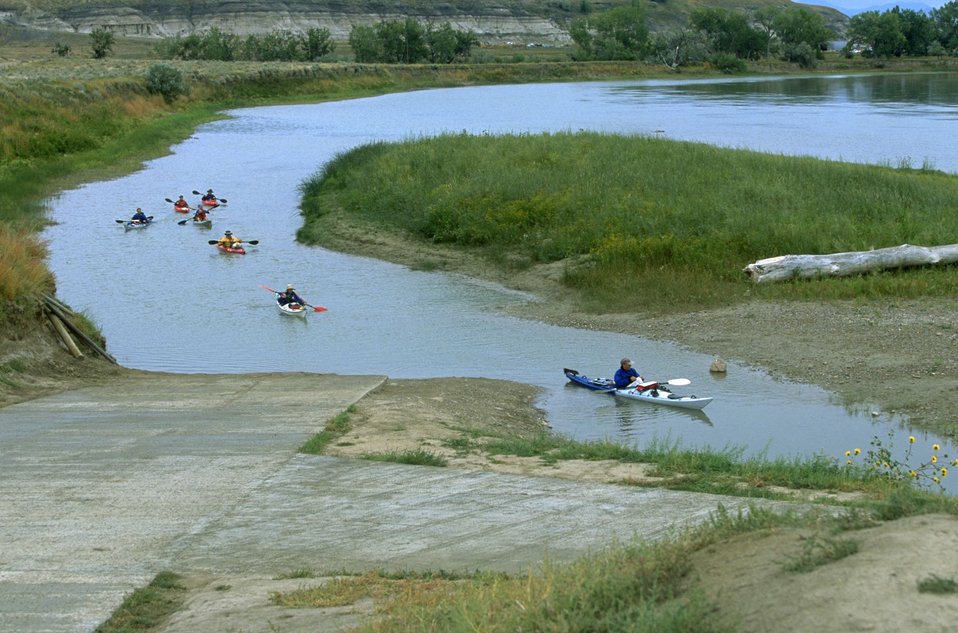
Floating the Upper Missouri River